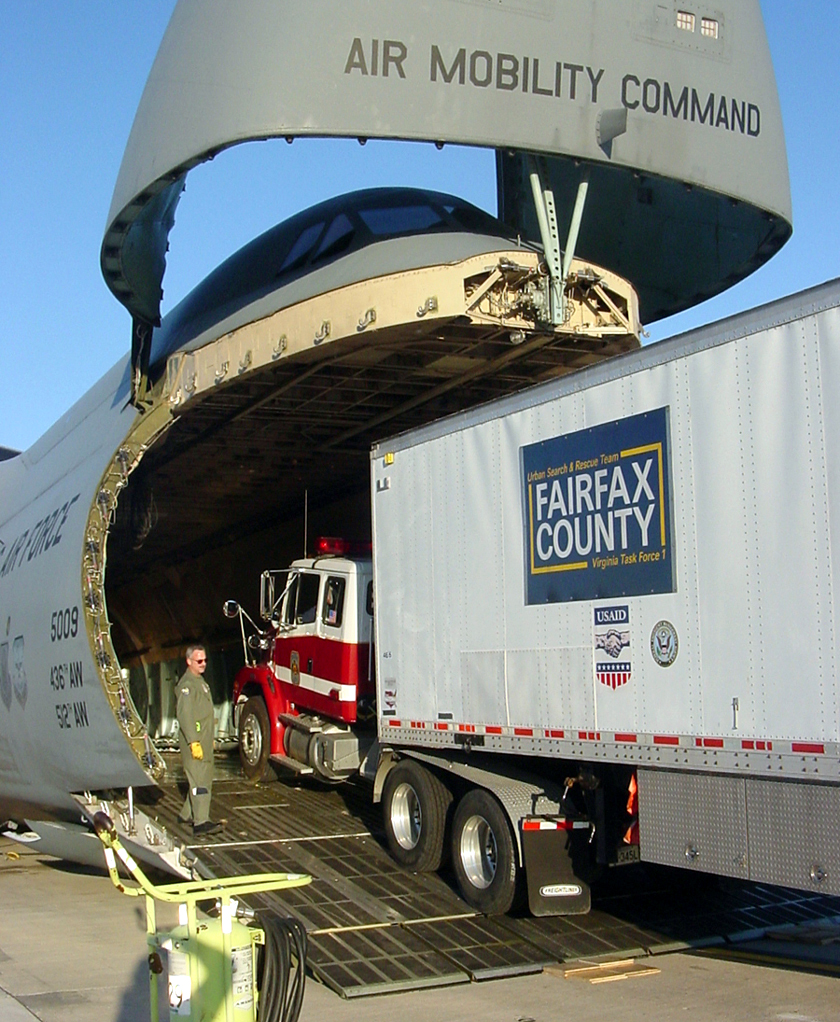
Help is on the way

DOVER AIR FORCE BASE, Del. -- A tractor-trailer is loaded aboard a C-5 Galaxy here Dec. 27. People and equipment from Virginia's Fairfax County Urban Search and Rescue Team were en route to assist with rescue and recovery operations following an earthquake in Bam, Iran. A crew from Dover's 9th Airlift Squadron flew the team to Europe on their first leg of the humanitarian mission.